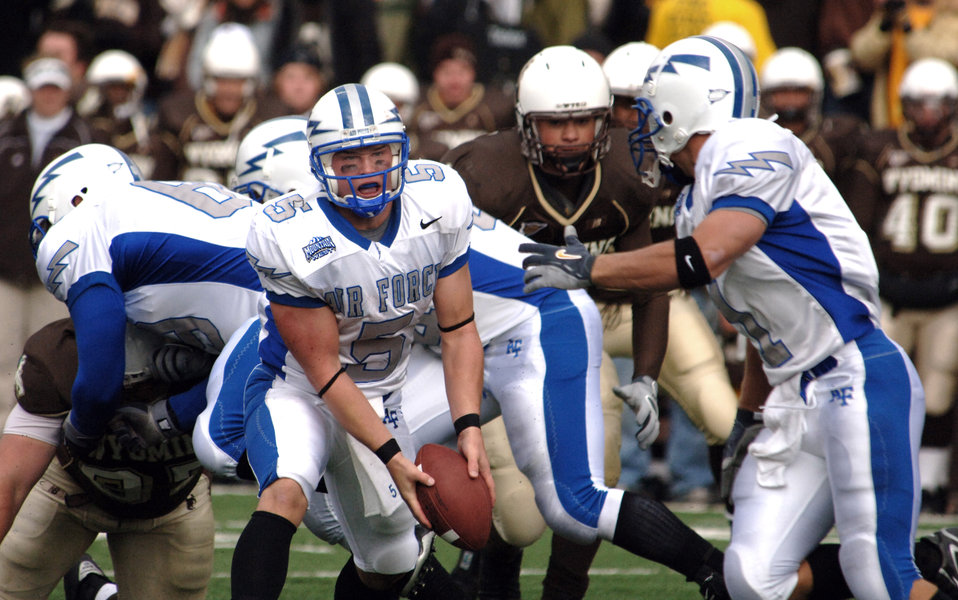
Falcons corral Cowboys in conference opener

Falcons quarterback Shaun Carney pitches to halfback Chad Hall. The Falcons' triple-option rushing attack anchored a running game that had 70 carries for 327 yards against Wyoming Sept. 23. Air Force won their Mountain West Conference opener 31-24, and next faces New Mexico Sept. 30 at Falcon Stadium.